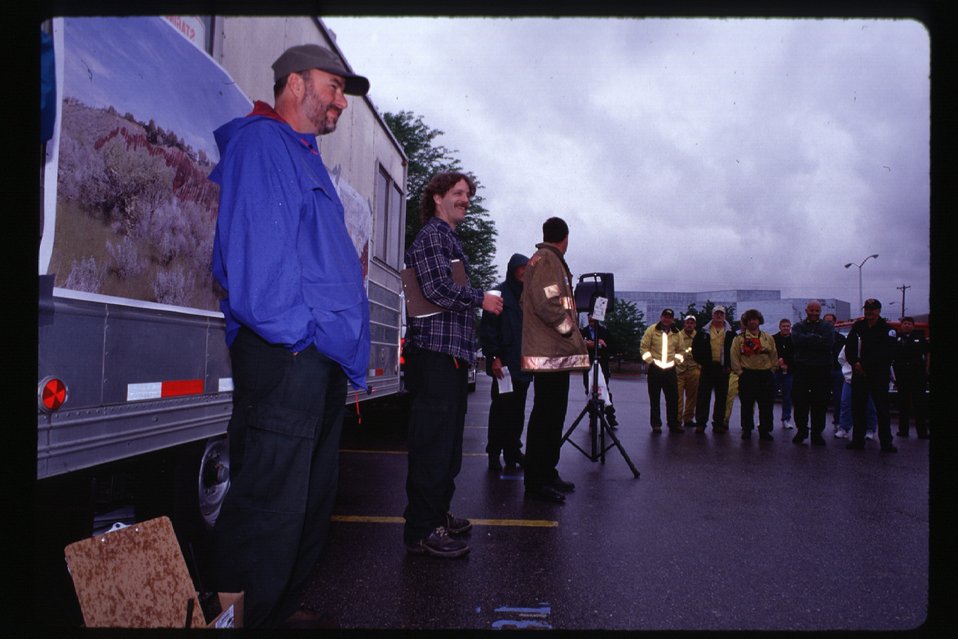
Fire fighter training Four Rivers Field Office LSRD Lower Snake River District